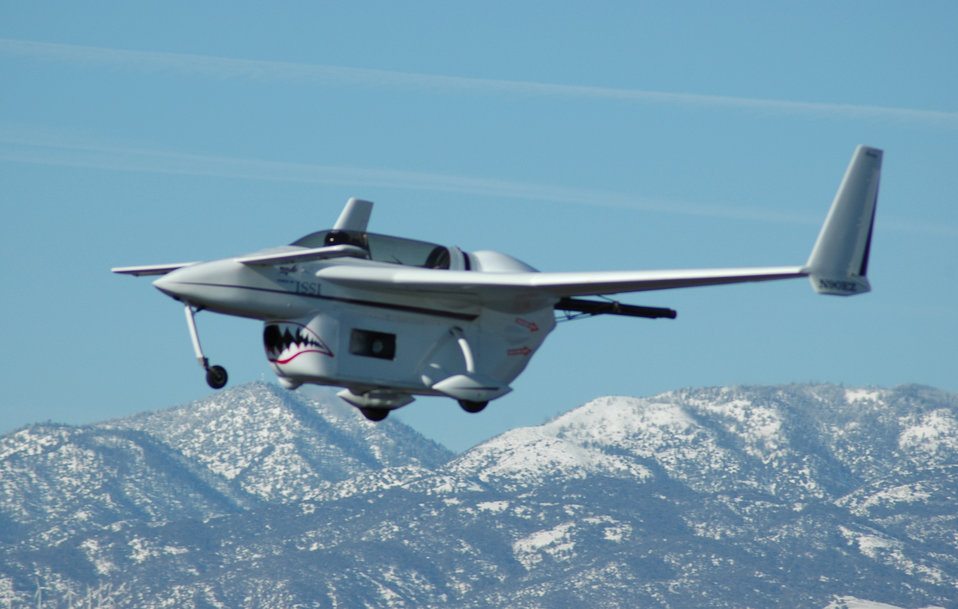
Pulsed detonation engine flies into history

The Long E-Z aircraft, powered by the pulsed detonation engine, makes its history-making flight Jan. 31 at Mohave, Calif. Soon it will be on display at the National Museum of the U.S. Air Force at Wright-Patterson Air Force Base, Ohio.